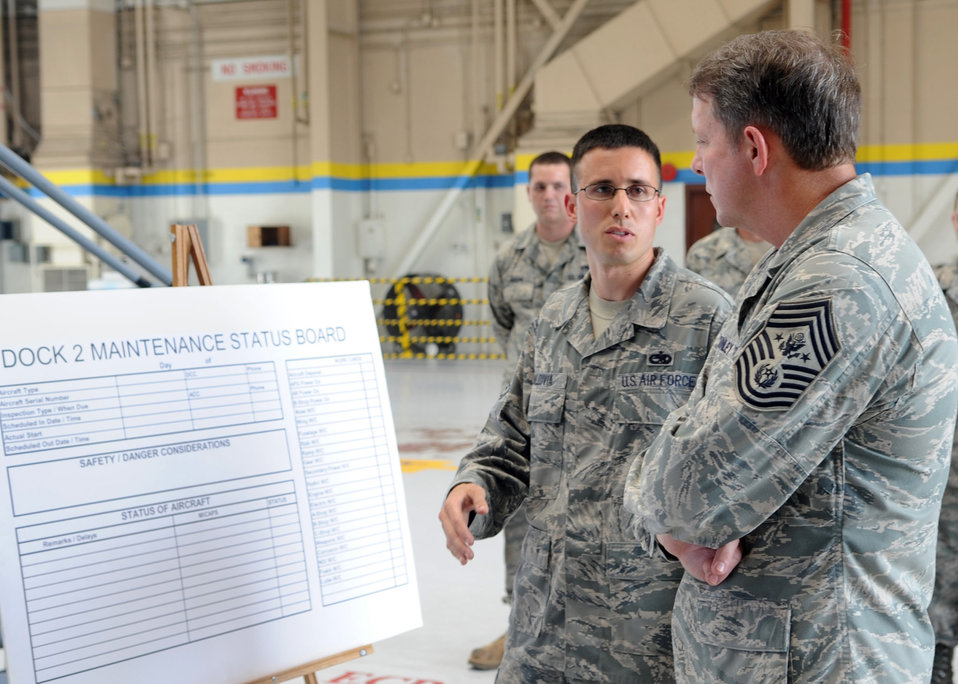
CMSAF Visit

Staff Sgt. Justin Baldivia, 4th Equipment Maintenance Squadron, explains hydraulic purification capabilities for the F-15E Strike Eagle to Chief Master Sgt. of the Air Force Rodney McKinley on Seymour Johnson Air Force Base, June 12. Chief McKinley is the 15th CMSAF and serves as adviser to the Chief of Staff and the Secretary of the Air Force on issues regarding the enlisted force.